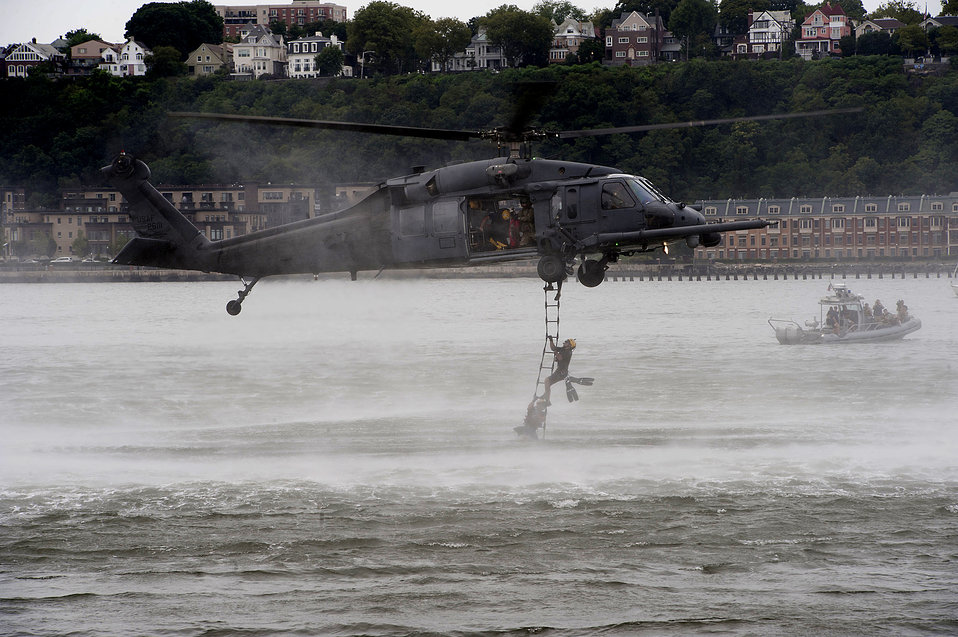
2012 Air Force Week NYC

The 106th Rescue Wing of the New York Air National Guard performs a water rescue demonstration with an HH-60 Pave Hawk helicopter during Air Force Week 2012 in New York City on Aug 19.